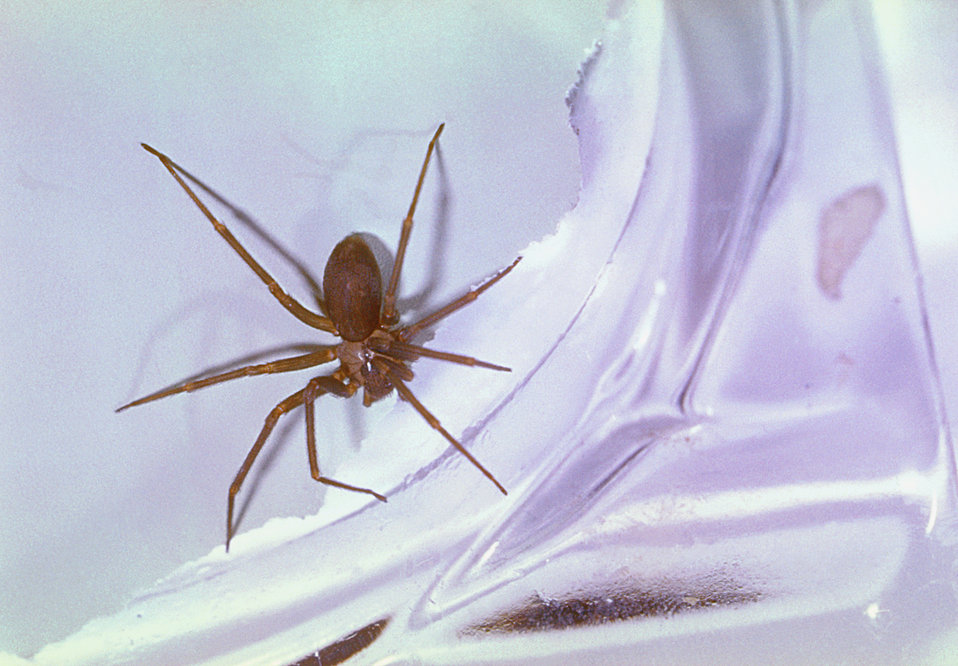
The Brown Recluse spider, Loxosceles reclusa, has a distribution throughout North America.